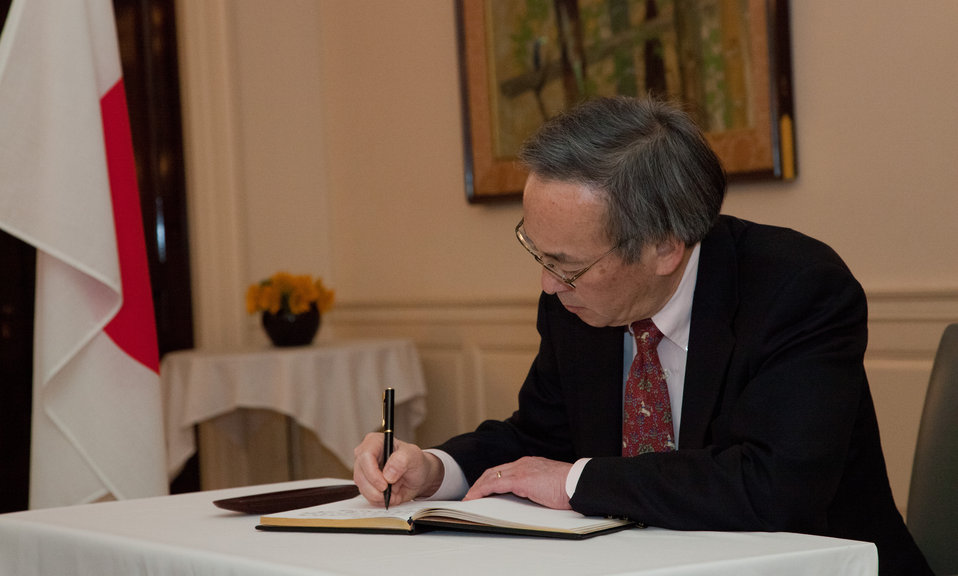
Sec. Chu visits Japanese Embassy 4 of 8

Sec. Steven Chu signs a book of condolences for the tragedy in Japan.